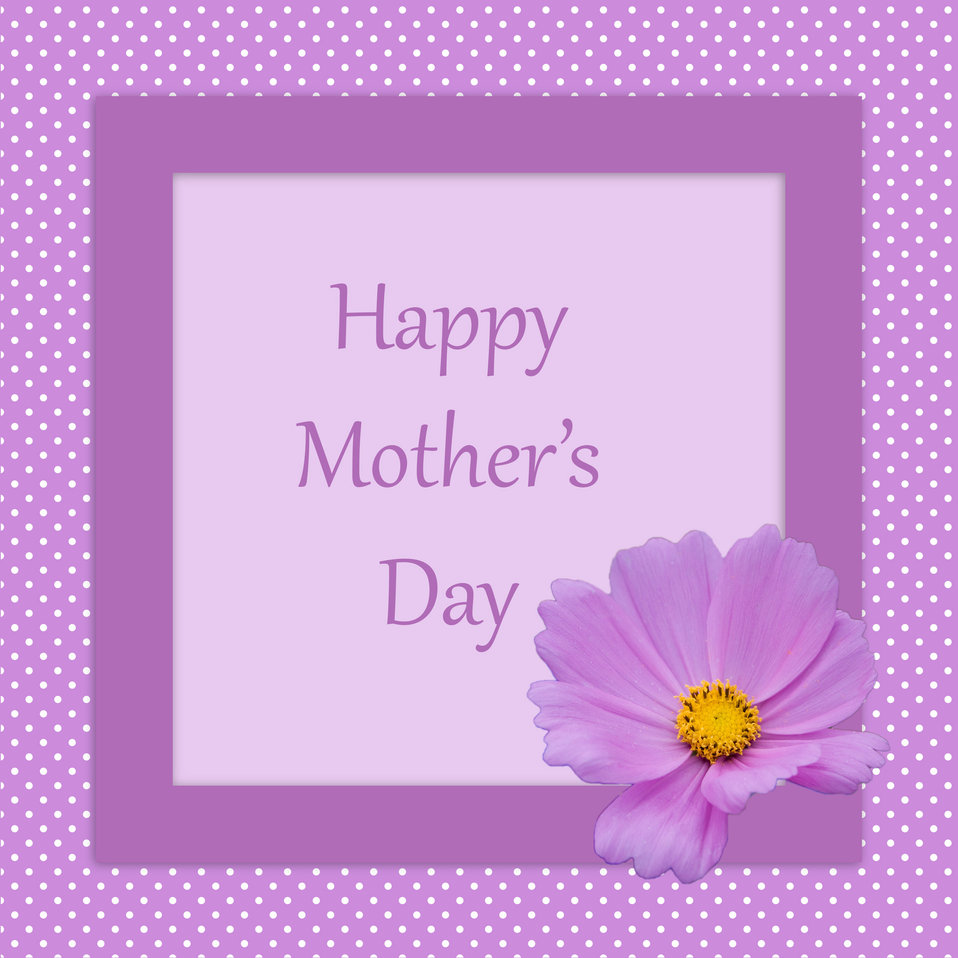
Mother's day card flower

Purple polka dot and flower mother's day card for scrapbooking.